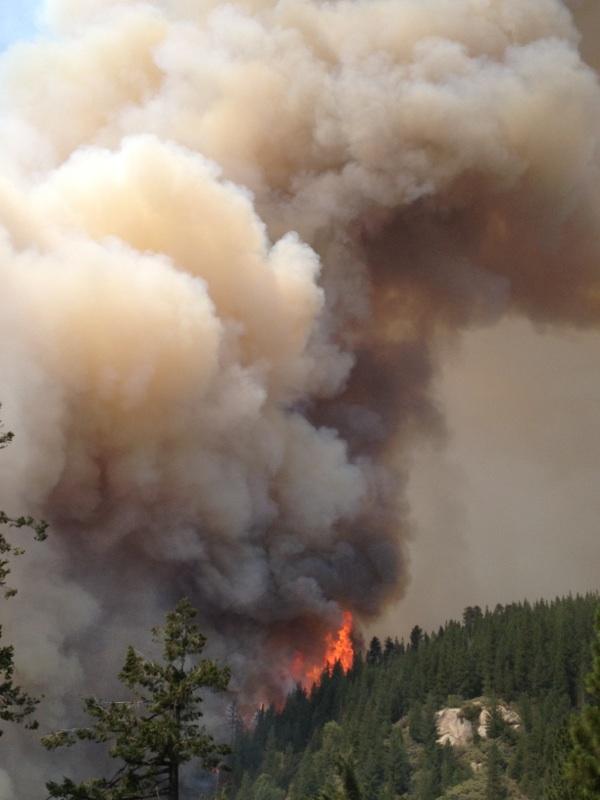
The Aspen Fire in the Sierra National Forest near Big Creek, CA began on Jul. 22, 2013 by lightning and has consumed approximately 20,252 acres and is approximately 70% contained.